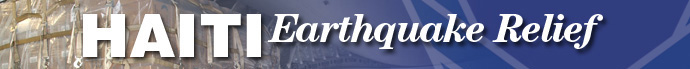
Haiti Relief banner (cropped)

Haiti Relief banner